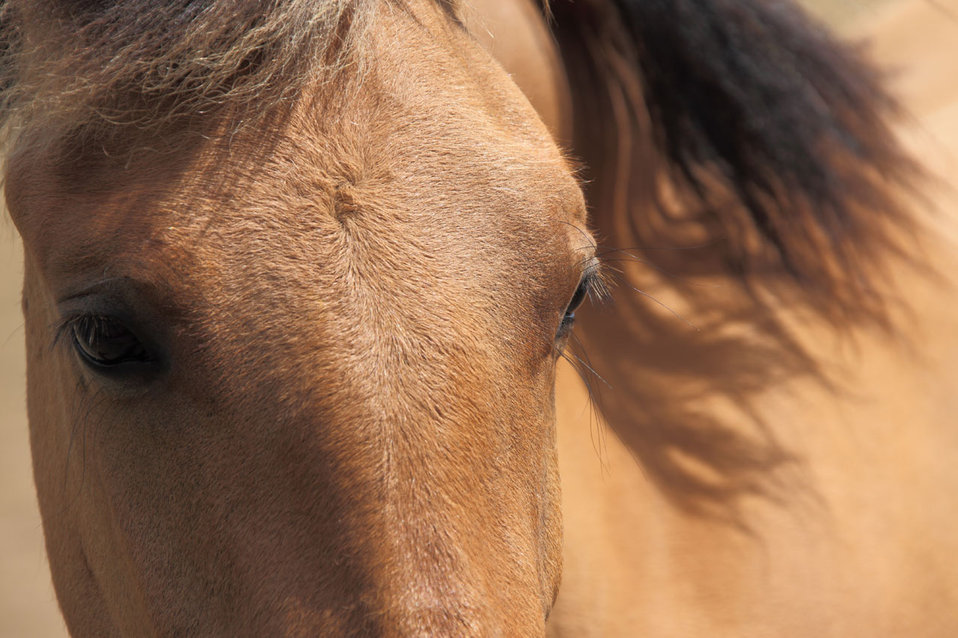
Eyes of a brown horse

Detailed photo of a brown horse.